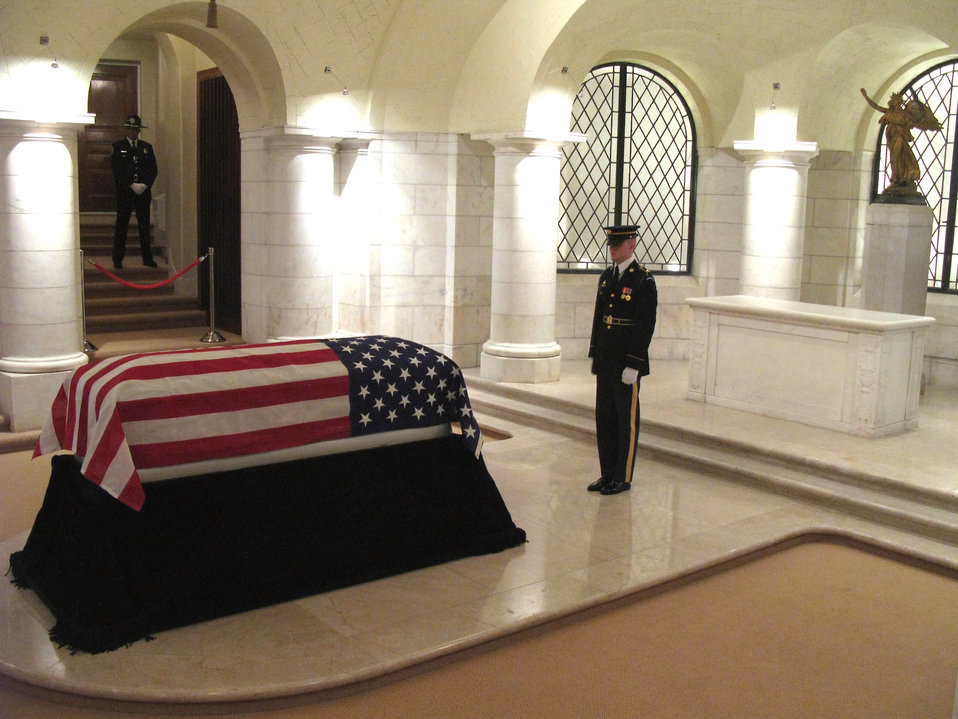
Doughboy’s burial marks end of era

A soldier with the Army’s 3rd Infantry Regiment, “The Old Guard,” keeps a constant vigil over the casket of Army Cpl. Frank Woodruff Buckles, the last U.S. World War I veteran, as he laid in repose before his burial March 15, 2011, at Arlington National Cemetery. A gold-leafed “Winged Victory” figure presented to President Warren G. Harding when the unknown soldier of World War I was buried at Arlington on Nov. 11, 1921 watches over Mr. Buckles’ casket.